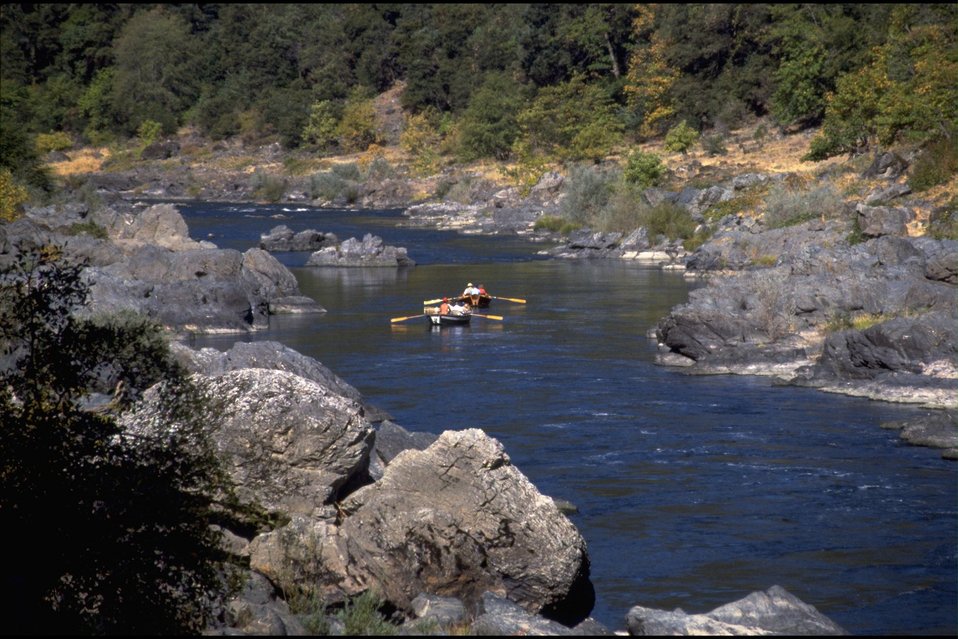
Rogue River - Below Rainie Falls (950 cfs), wild section. Drift boat fishing.